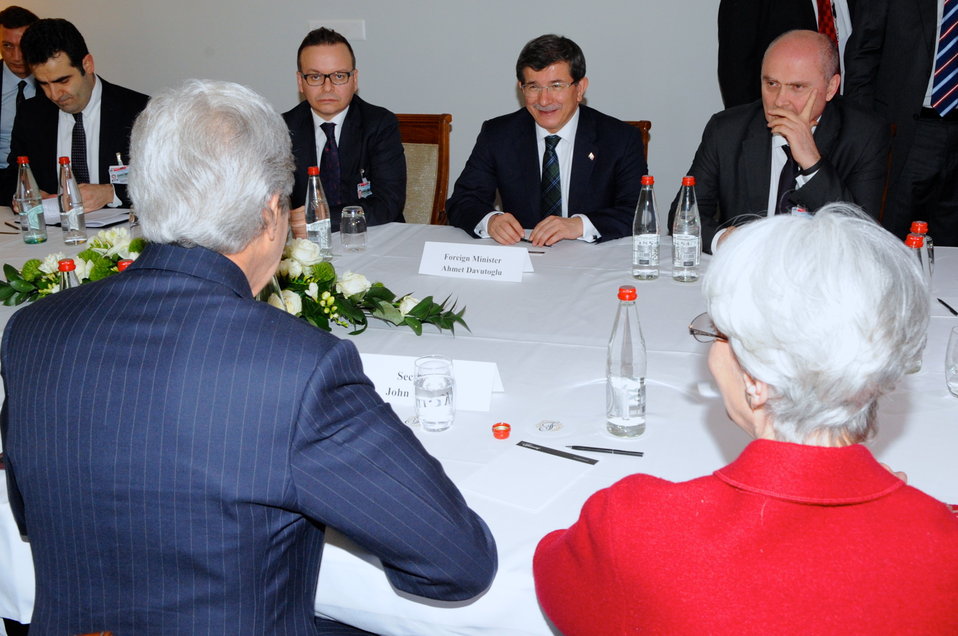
Secretary Kerry Holds a Bilateral Meeting With Turkish Foreign Minister Davutoglu

U.S. Secretary of State John Kerry, flanked by Under Secretary of State for Political Affairs Wendy Sherman, sits for a bilateral meeting with his Turkish counterpart, Foreign Minister Ahmet Davutoglu, on the margins of the Geneva II conference in Montreux, Switzerland, on January 22, 2014.